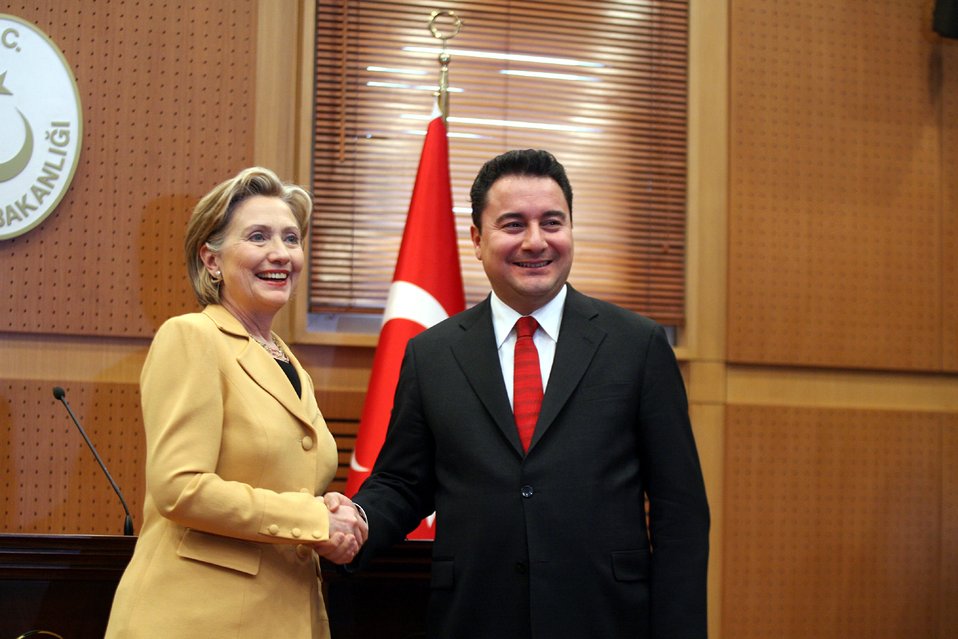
Secretary Clinton With Turkish Foreign Minister

U.S. Secretary of State Hillary Rodham Clinton with Turkish Foreign Minister Ali Babacan after their joint press conference. Turkish Ministry of Foreign Affairs, Ankara, Turkey March 7, 2009.